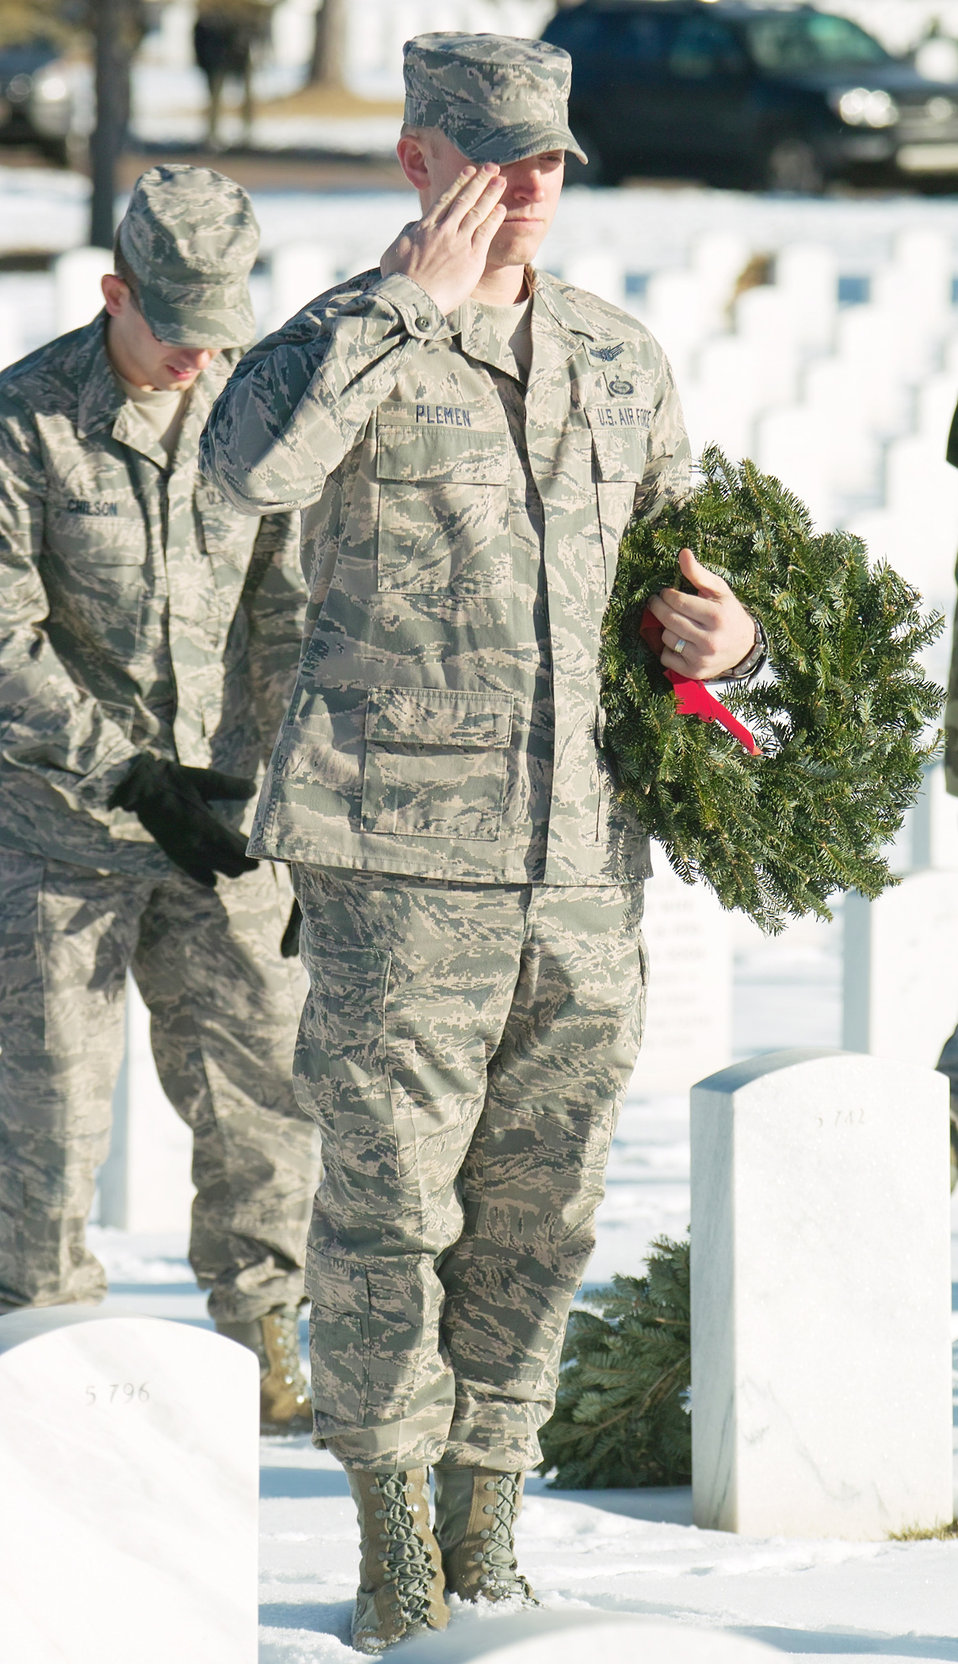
A holiday tribute

Tech. Sgt. David Plemen salutes after laying a wreath during Wreaths Across America Dec. 14, 2009, at Fort Logan National Cemetery in Littleton, Colo. He is with the 566th Intelligence Squadron.